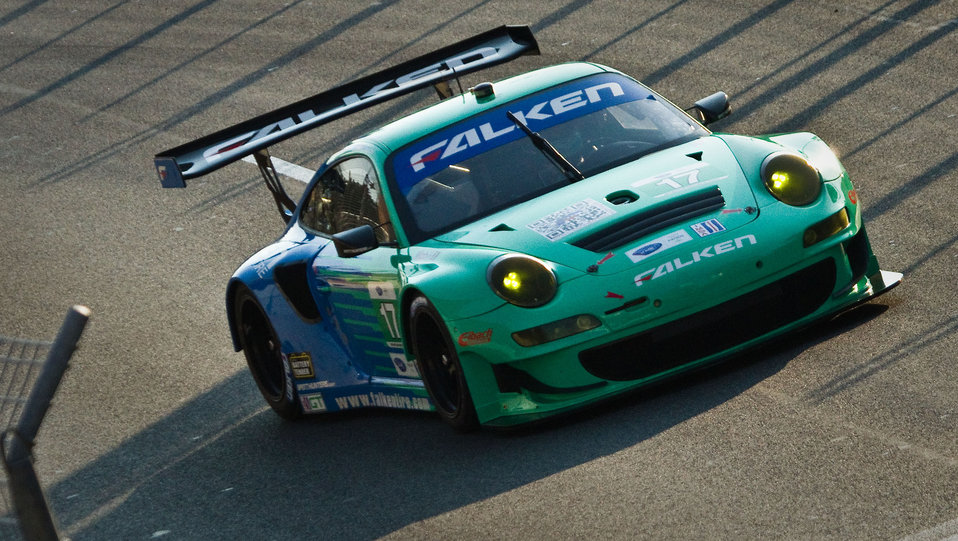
The Number 17, Porsche GT3 911 RSR of Team Falken Tire uses E85 fuel for the American Le Mans Series (ALMS) motorsport series at the Baltimore Grand Prix, on the streets of downtown Baltimore, MD, on Friday, August 31, 2012, Labor Day Weekend. ALMS says they are “the Global Leader in Green Racing by being the only racing series recognized to comply with the Green Racing protocols developed by the U.S. Department of Energy (DOE), the U.S. Environmental Protection Agency (EPA) and Society of American Engineers International (SAE).” Instead of high-octane gasoline all the cars in the series use one of 5 different forms of energy (system). Clean diesel, E85, E10, isobutanol or hybrid energy technology. The specific hybrid system, used by the Porsche GT3 cars, are a (battery-less) flywheel-based Kinetic Energy Recovery Systems. These organizations are accelerating technology development at speeds up to 200 mph, in 650-700 horsepower race cars that are based on two groups of cars; the purpose built prototype race cars and the GT
(Grand Touring) cars based on production sports cars that you can see in showrooms. From these groups, there are five classes of cars, all of which race at the same time during the race events.
The U.S. Department of Agriculture (USDA) focuses on renewable fuel sources that are profitable and sustainable. 2011 accomplishments include research and planning for renewable energy and investments in renewable energy production.
- Completed a Biofuels Roadmap proposing a plan of action to meet congressionally mandated RFS2 goals for national biofuels production.
-Coordinated five regional research centers to work on the science necessary to ensure profitable biofuels can be produced from a diverse range of feed stocks across the nation, not just in the Midwest where the industry is already thriving.
-Over three years, USDA invested about $320 million to accelerate research on renewable energy ranging from genomic research on bioenergy feedstock crops, to development of biofuel conversion processes and costs/benefit estimates of renewable energy production.
- More than 130 biodiesel and ethanol projects funded by USDA are currently producing almost 3.7 billion gallons of biodiesel and ethanol annually, enough fuel – in equivalence to gasoline – to keep five million vehicles on the road every year.
-We are supporting efforts to build five biorefineries to produce advanced biofuels in states from Florida and Michigan to New Mexico, with investments worth about $310 million. We are supporting facility upgrades and feasibility studies for advanced biofuels projects in every region of the country.